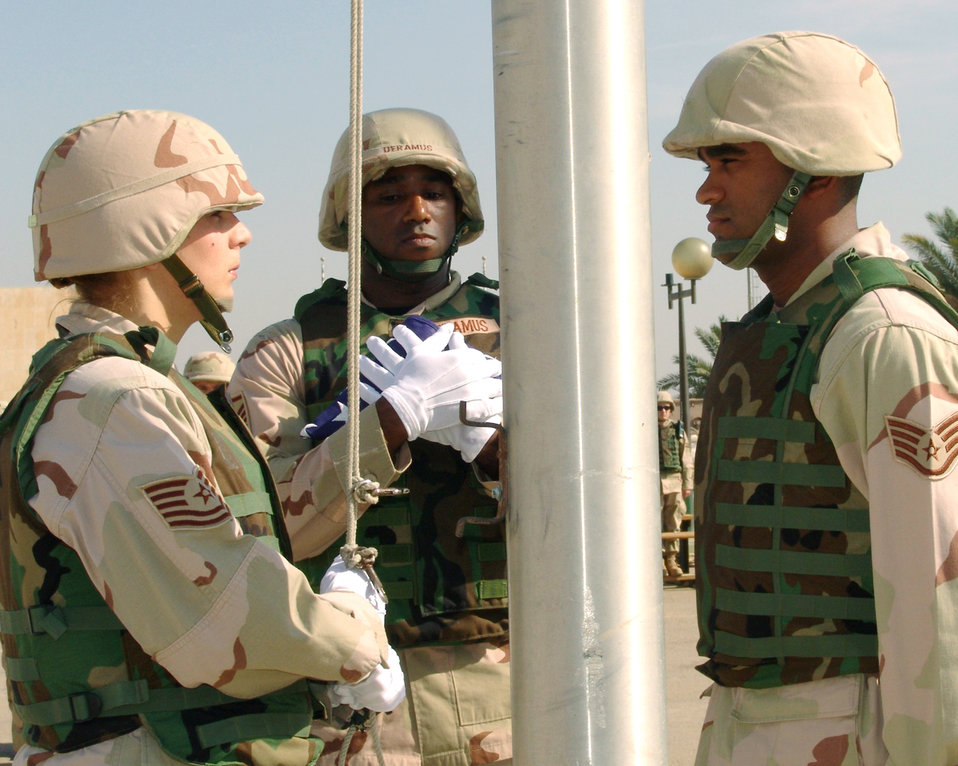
A day to remember

BAGHDAD, Iraq - (From left) Tech. Sgt. Rebecca Meli, Master Sgt. Timothy Deramus and Staff Sgt. Richard Forbes ready themselves to raise the flag during a Veterans Day ceremony at Camp Sather here Nov. 11. Sergeant Meli is a medical technician deployed from the Air National Guard at Niagara Falls, N.Y. Sergeant Deramus is an information manager, and Sergeant Forbes is a supply craftsman. Both are deployed from Luke Air Force Base, Ariz.